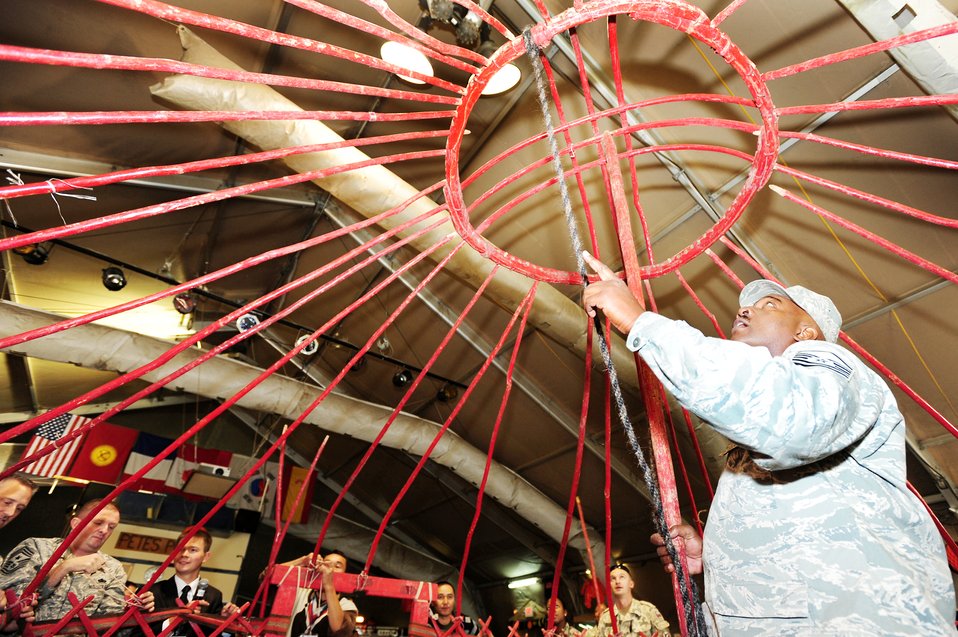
Airmen learn traditions during Kyrgyz Cultural Day

Master Sgt. John Shoulars, 376th Expeditionary Force Support Squadron sustainment flight chief, holds up the tyundyuk while others connect the roof of a traditional Kyrgyz yurt during Kyrgyz Culture Day at the Transit Center at Manas, Kyrgyzstan. The tyundyuk is symbolic of Kyrgyzstan and is the center of the country's flag.